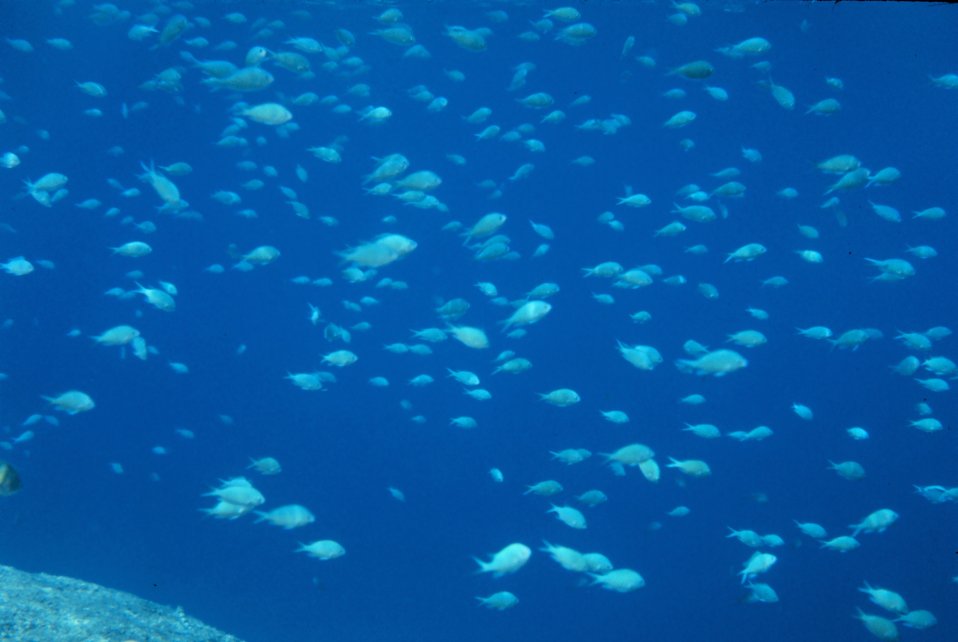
Lyretail anthias